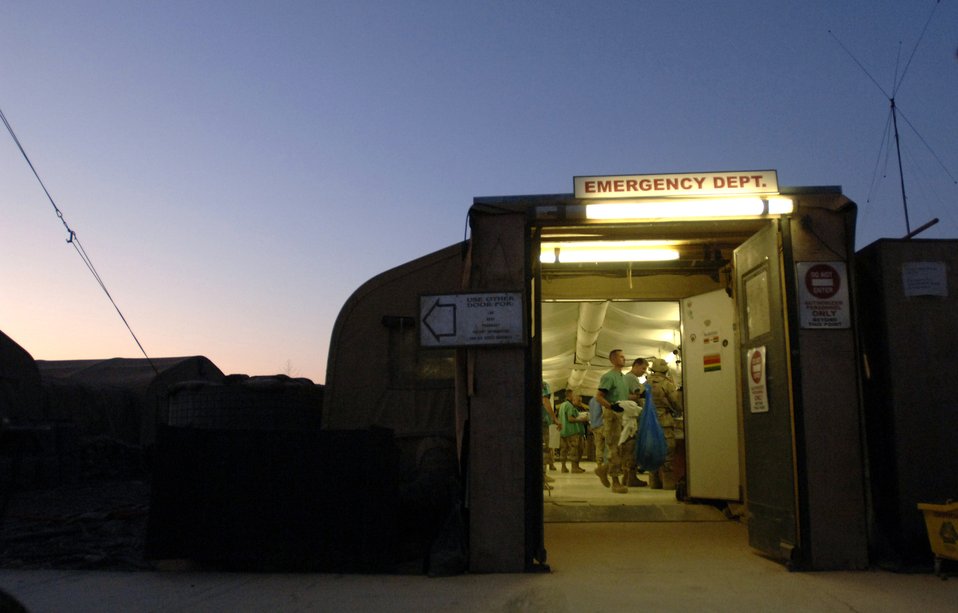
A hospital for heroes

Medics tend to a patient Feb. 19 in the emergency room of the Air Force Theater Hospital at Balad Air Base, Iraq. As nightfall approached, 39 patients had been treated at the hospital that day. The medical facility has a survival rate of 98 percent.